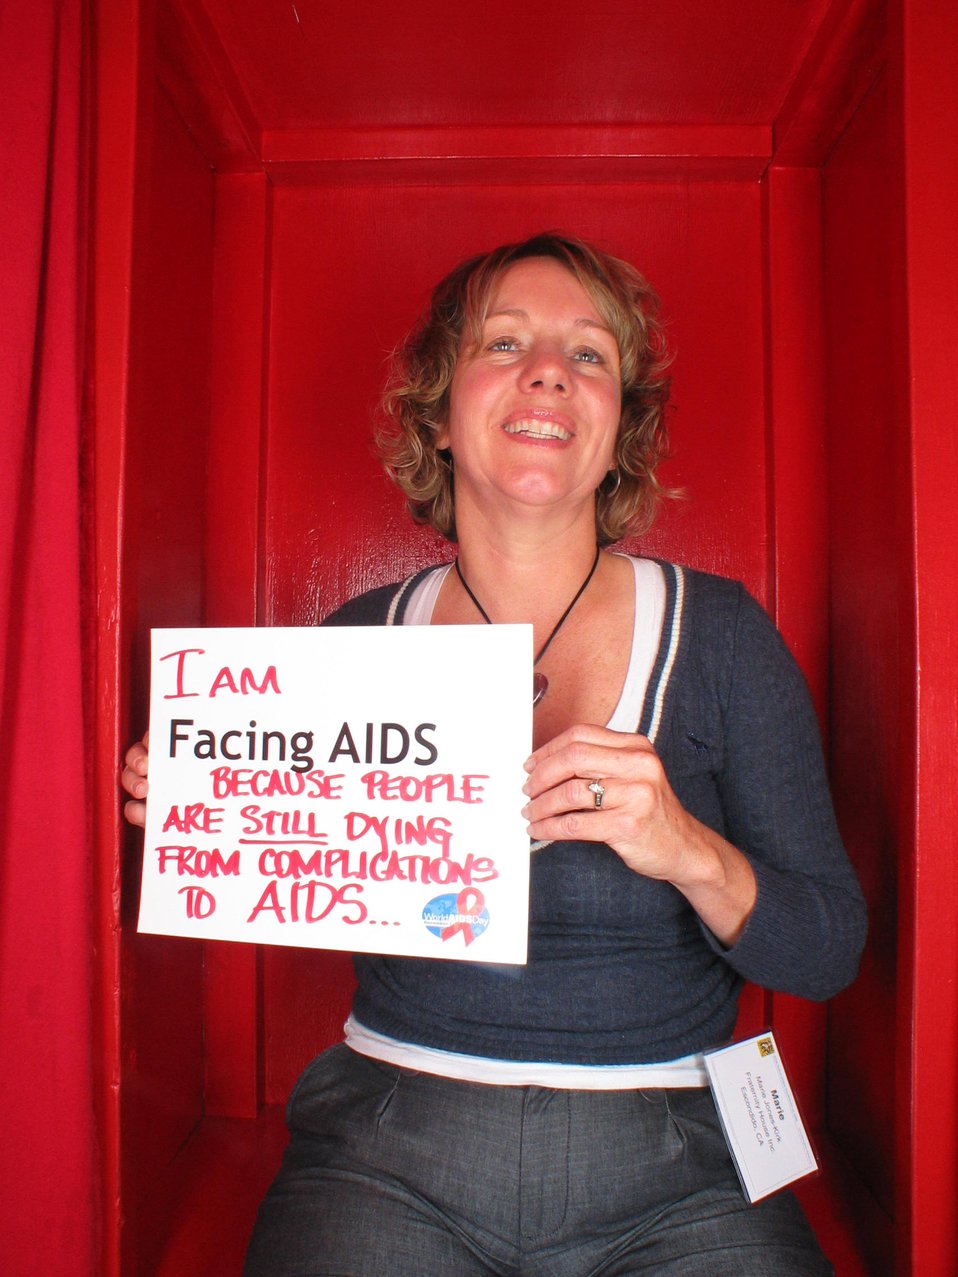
I am Facing AIDS because people are still dying from complications to AIDS...